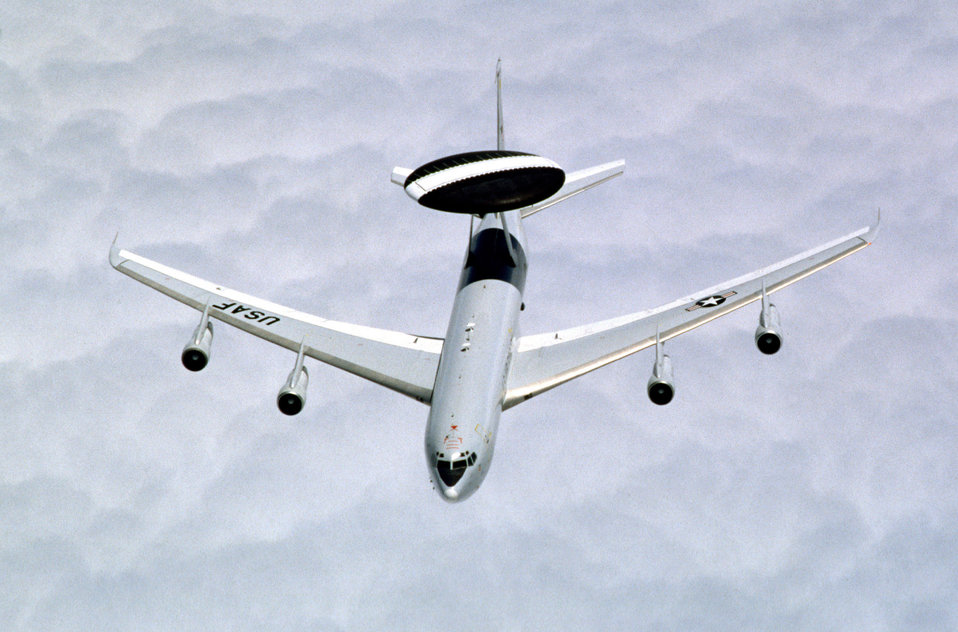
Sentry

FILE PHOTO -- An E-3 Sentry approaches a KC-10A Extender for aerial refueling June 29, 2000. The E-3 Sentry is an airborne warning and control system aircraft that provides all-weather surveillance, command, control and communications needed by commanders of U.S. and NATO air defense forces. The E-3 Sentry is modified Boeing 707/320 commercial airframe with a rotating radar dome. The dome is 30 feet in diameter, 6 feet thick and is held 11 feet above the fuselage by two struts. It contains a radar subsystem that permits surveillance from the Earth's surface up into the stratosphere, over land or water. The radar has a range of more than 200 miles for low-flying targets and farther for aerospace vehicles flying at medium to high altitudes.